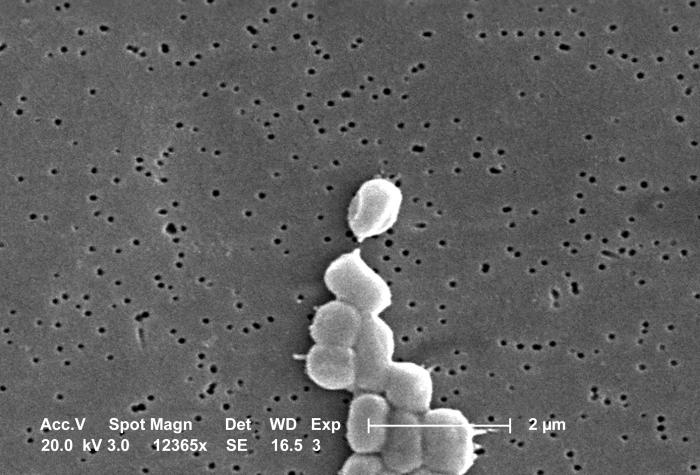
This SEM depicts a cluster of aerobic Gram-negative non-motile Acinetobacter baumannii bacteria under a magnification of 12,365x.